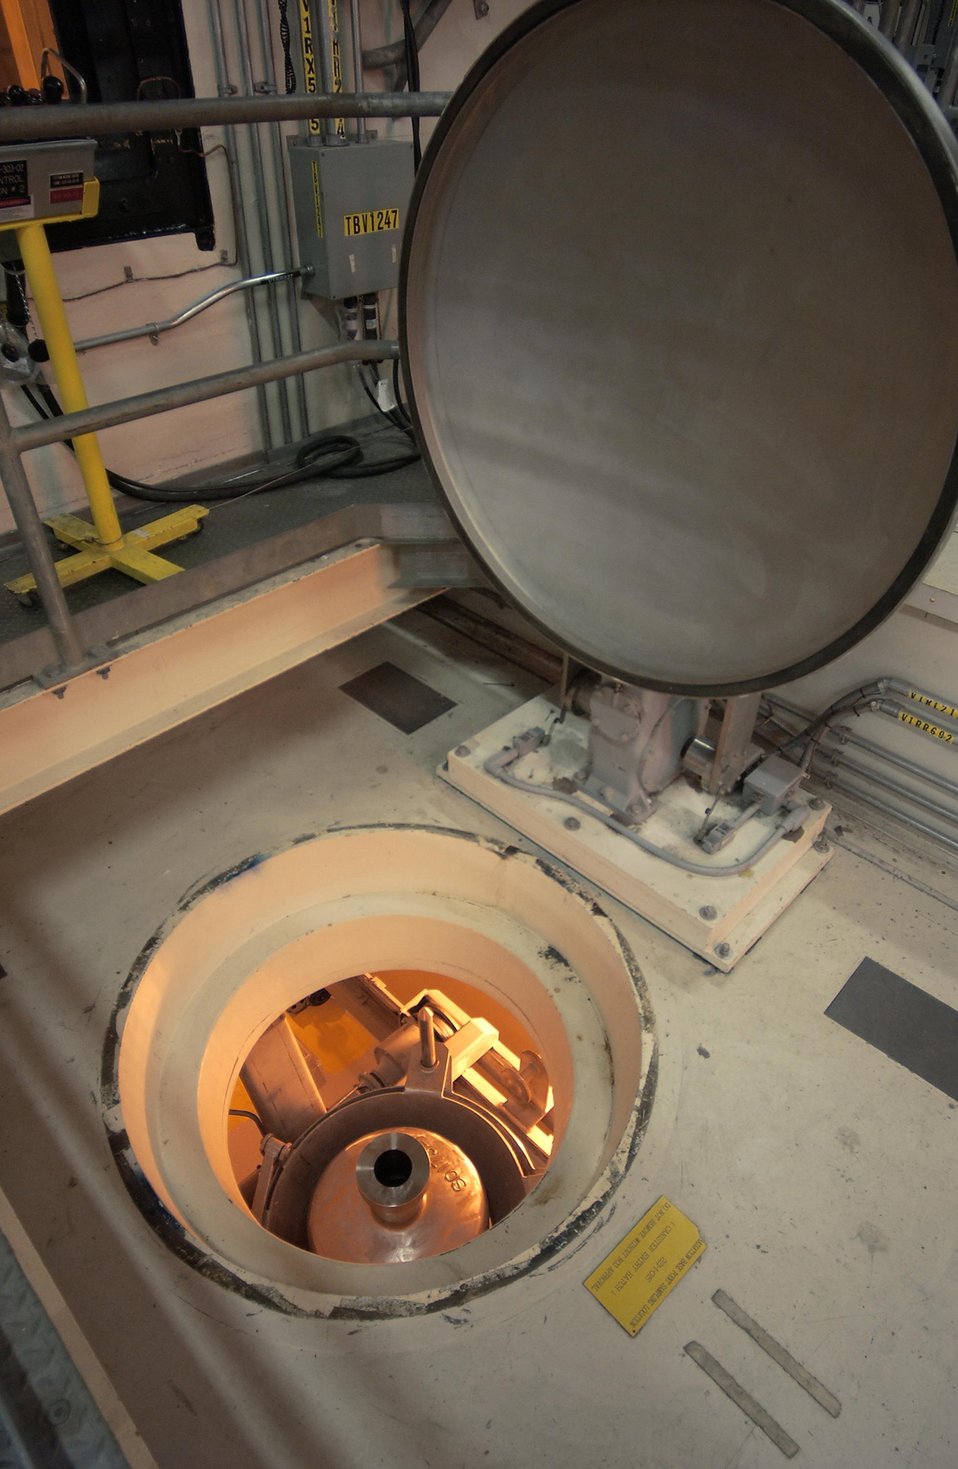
AN EMPTY CANISTER IN POSITION TO MAKE ITS WAY THROUGH THE VITRIFICATION PROCESS.

SAVANNAH RIVER SITE'S DWPF IS DESIGNED TO CONVERT HIGH LEVEL LIQUID DEFENSE NUCLEAR WASTE INTO BOROSILICATE GLASS, A STABLE FORM SUITABLE FOR STORAGE, TRANSPORTATION AND REPOSITORY STORAGE. THE WASTE TO GLASS PROCESS IS KNOWN AS VITRIFICATION. THE RADIOACTIVE WASTE IS FUSED WITH SAND AT A TEMPERATURE OF 2,000 DEGREES IN A LARGE CRANE OPERATED STEEL MIXER, POURED INTO STAINLESS STEEL CANISTERS TO HARDEN INTO A BLACK GLASS. THE SEALED CANISTERS ARE STORED VERTICALLY IN SLOTS ON A CONCRETE SLAB UNTIL THEY CAN BE MOVED TO A SAFE REPOSITORY.